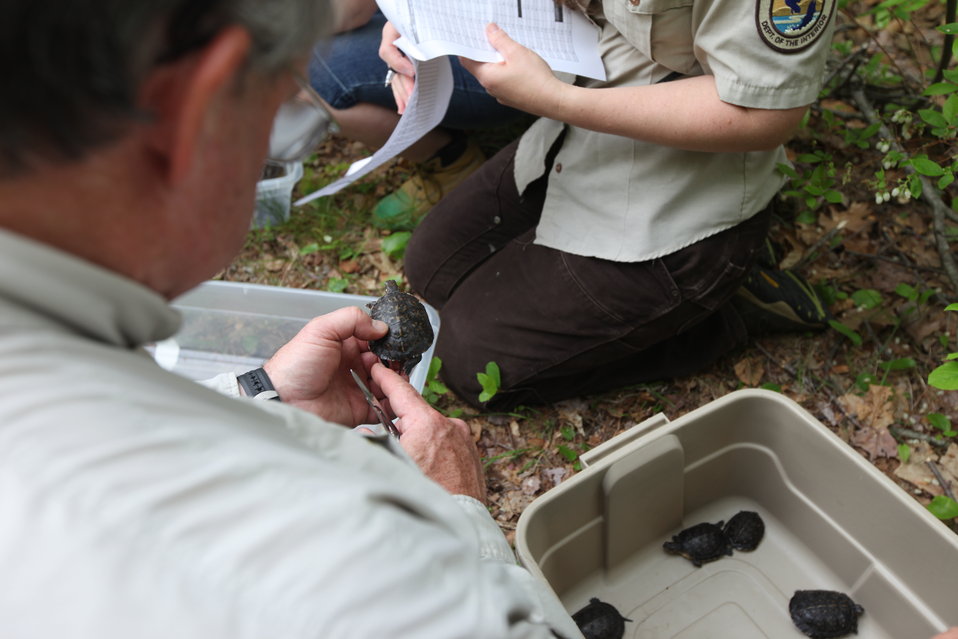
Taking Data on the Turtles

Blanding's turtle release, Assabet River, MA.